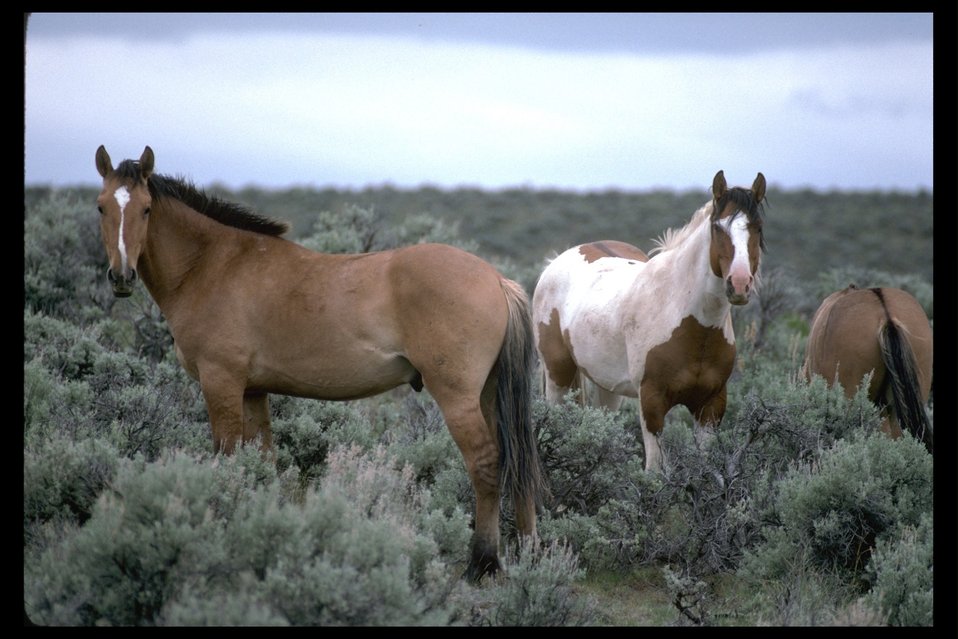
South Steens wild horses on the range.